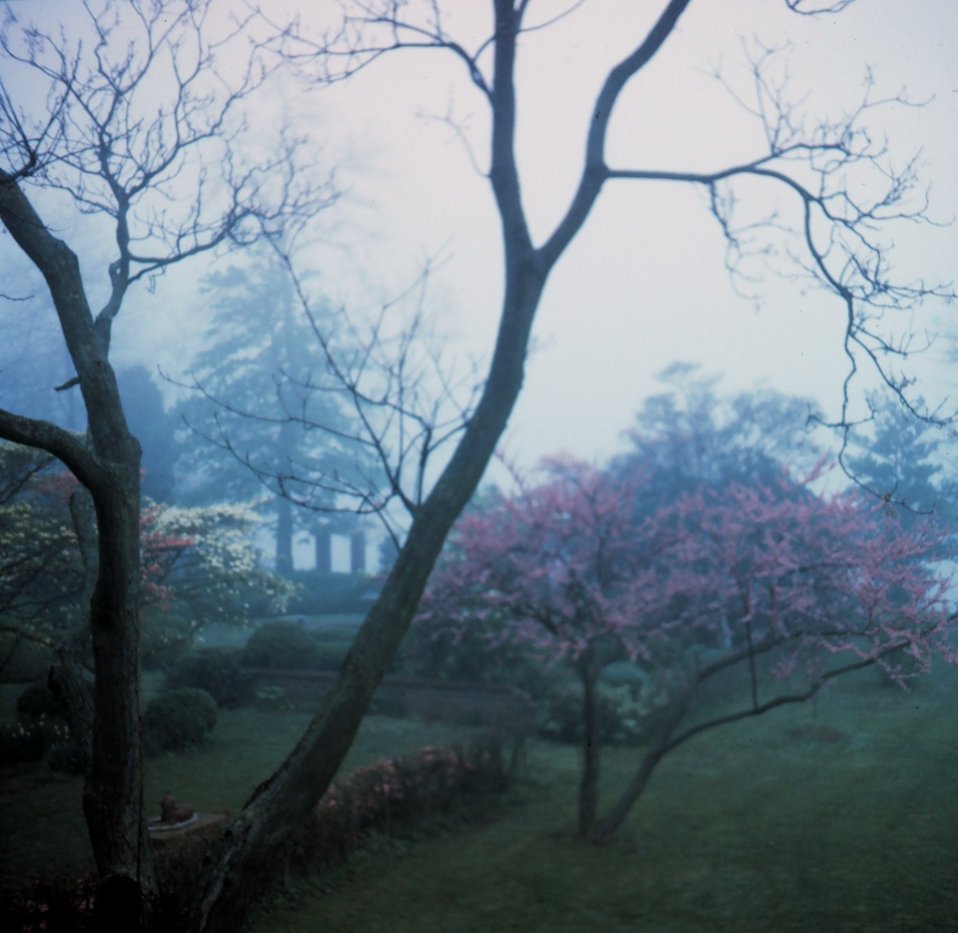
A foggy St. Mary's College of Maryland Garden of Remembrance, overlooking the St. Mary's River.